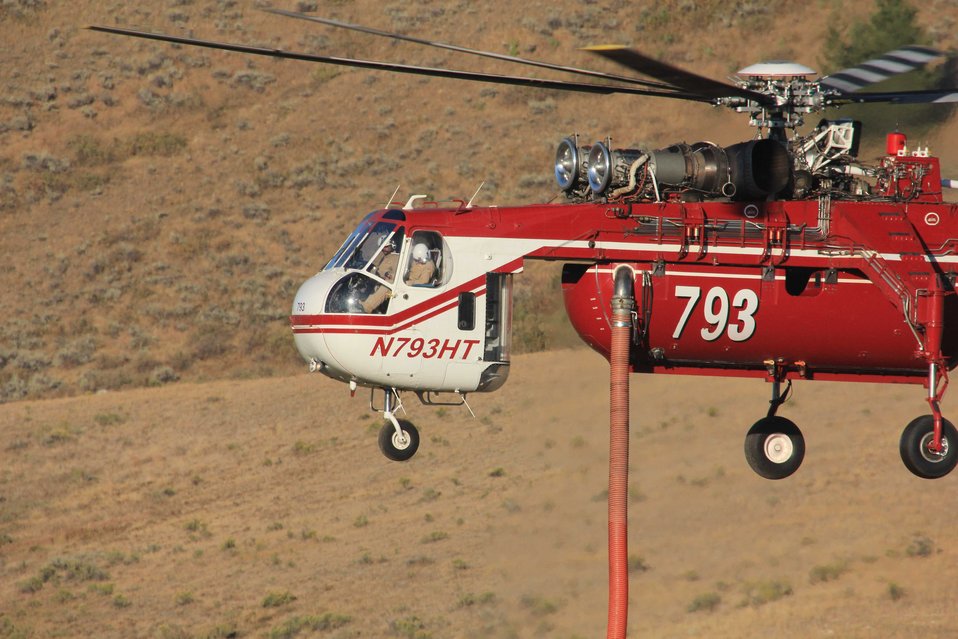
Hovering While Refilling

A Type I helicopter hovers over a dip tank of retardant, drawing up more of the slurry to transport to the fire.

Credit: USFWS / Tony Hough, National Elk Refuge volunteer